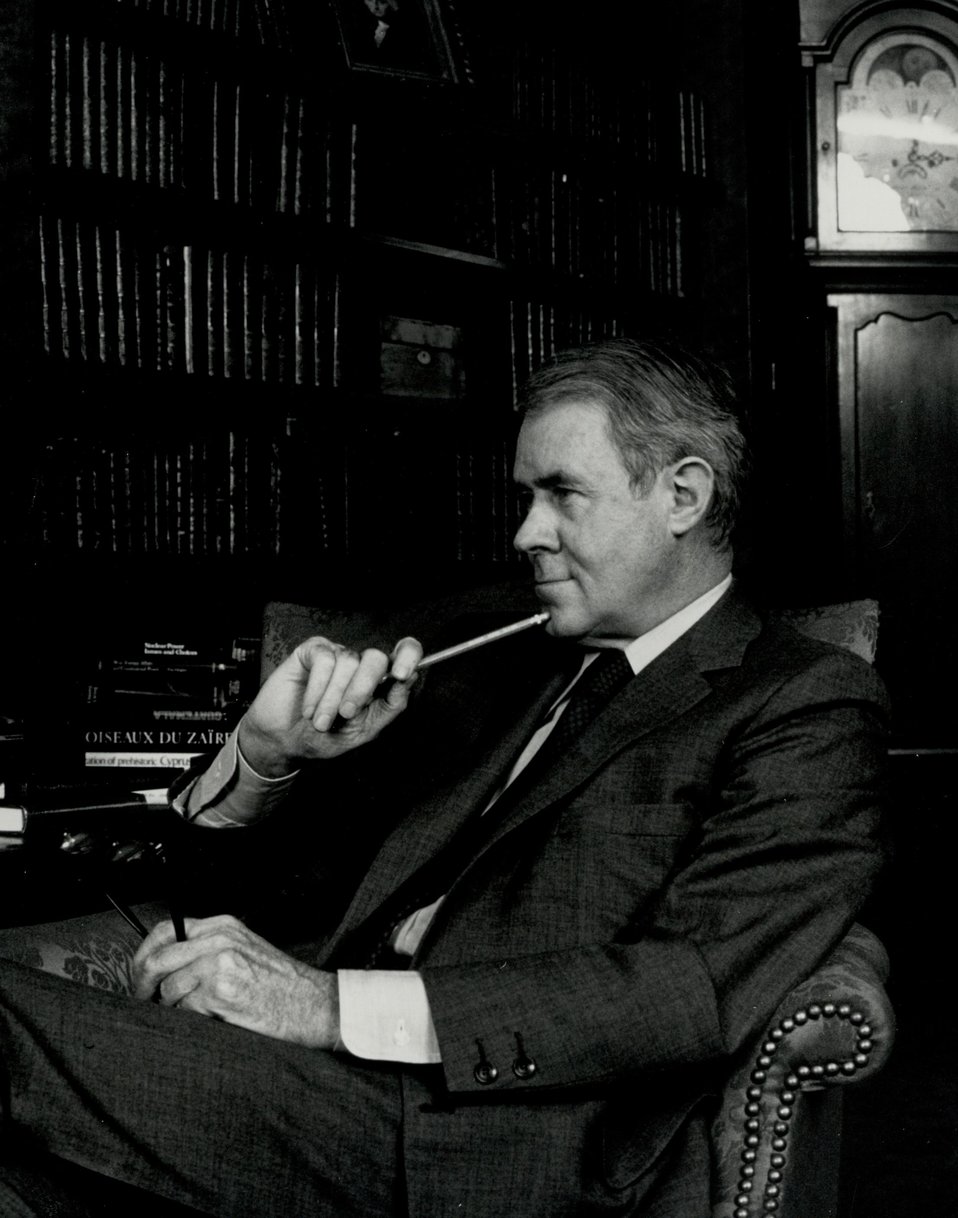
Cyrus Vance, U.S. Secretary of State, January 23, 1977 to April 28, 1980